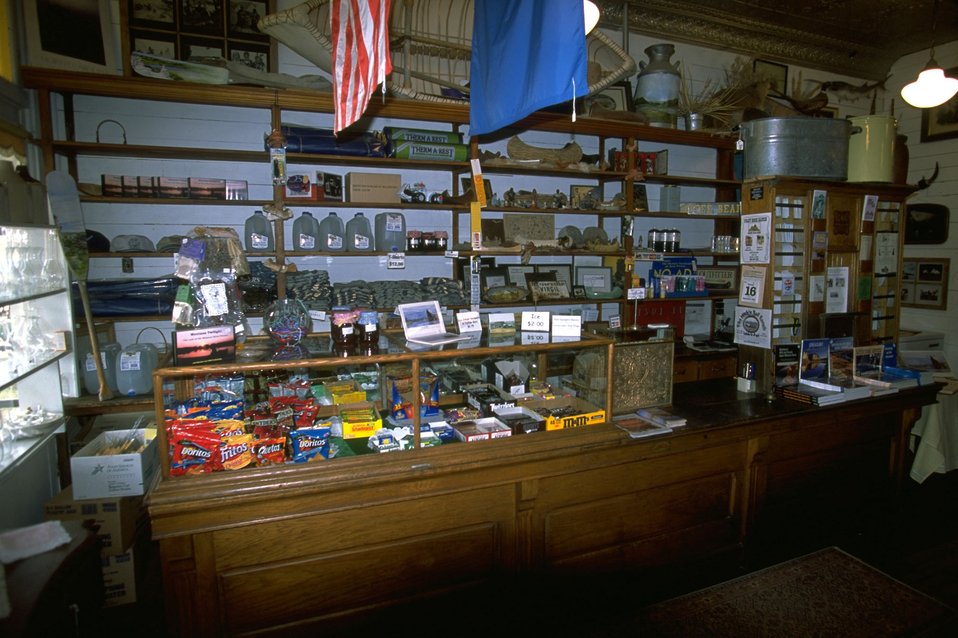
Virgelle Merchantile near Loma